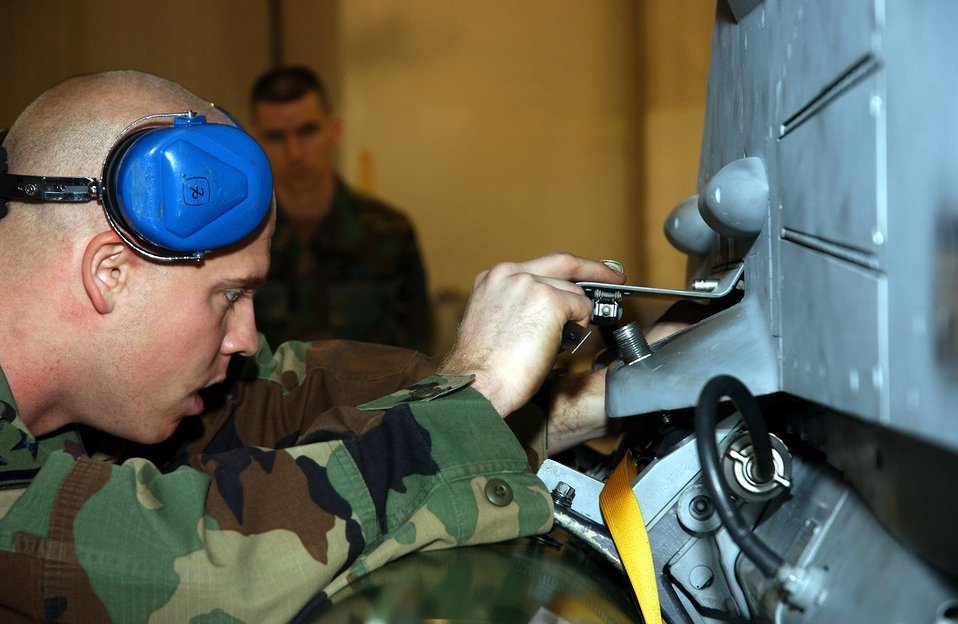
Bomb's away

EIELSON AIR FORCE, Alaska (AFPN) -- Staff Sgt. Aaron Slay checks a pin during a quarterly load crew competition here. Each team of F-16 Fighting Falcon and A-10 Thunderbolt II weapon loaders is evaluated in timeliness and accuracy of loading munitions. Sergeant Slay is a weapons crew chief assigned to the 354th Aircraft Maintenance Squadron